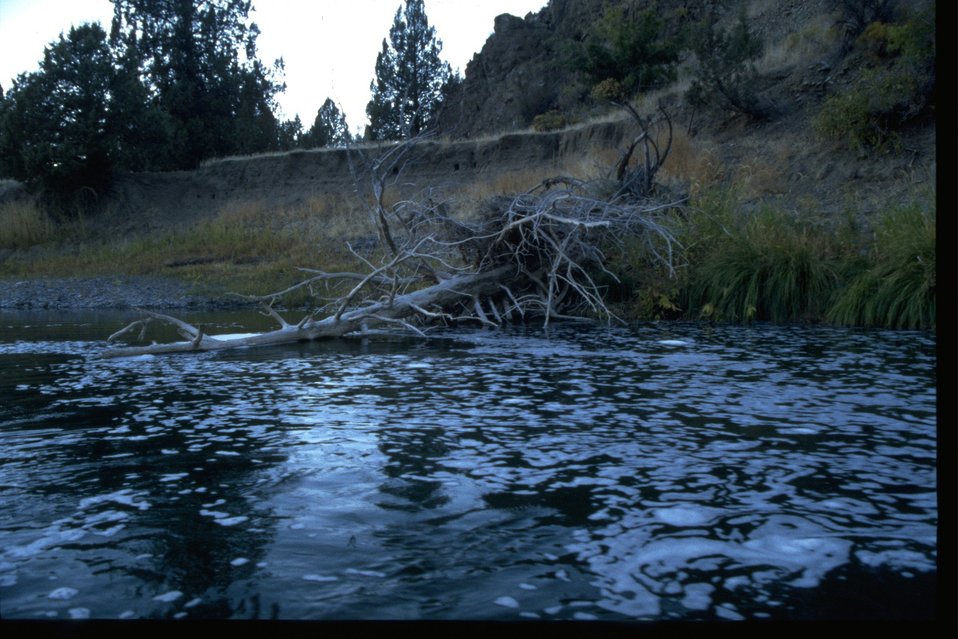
Old dead juniper fallen into the John Day River.